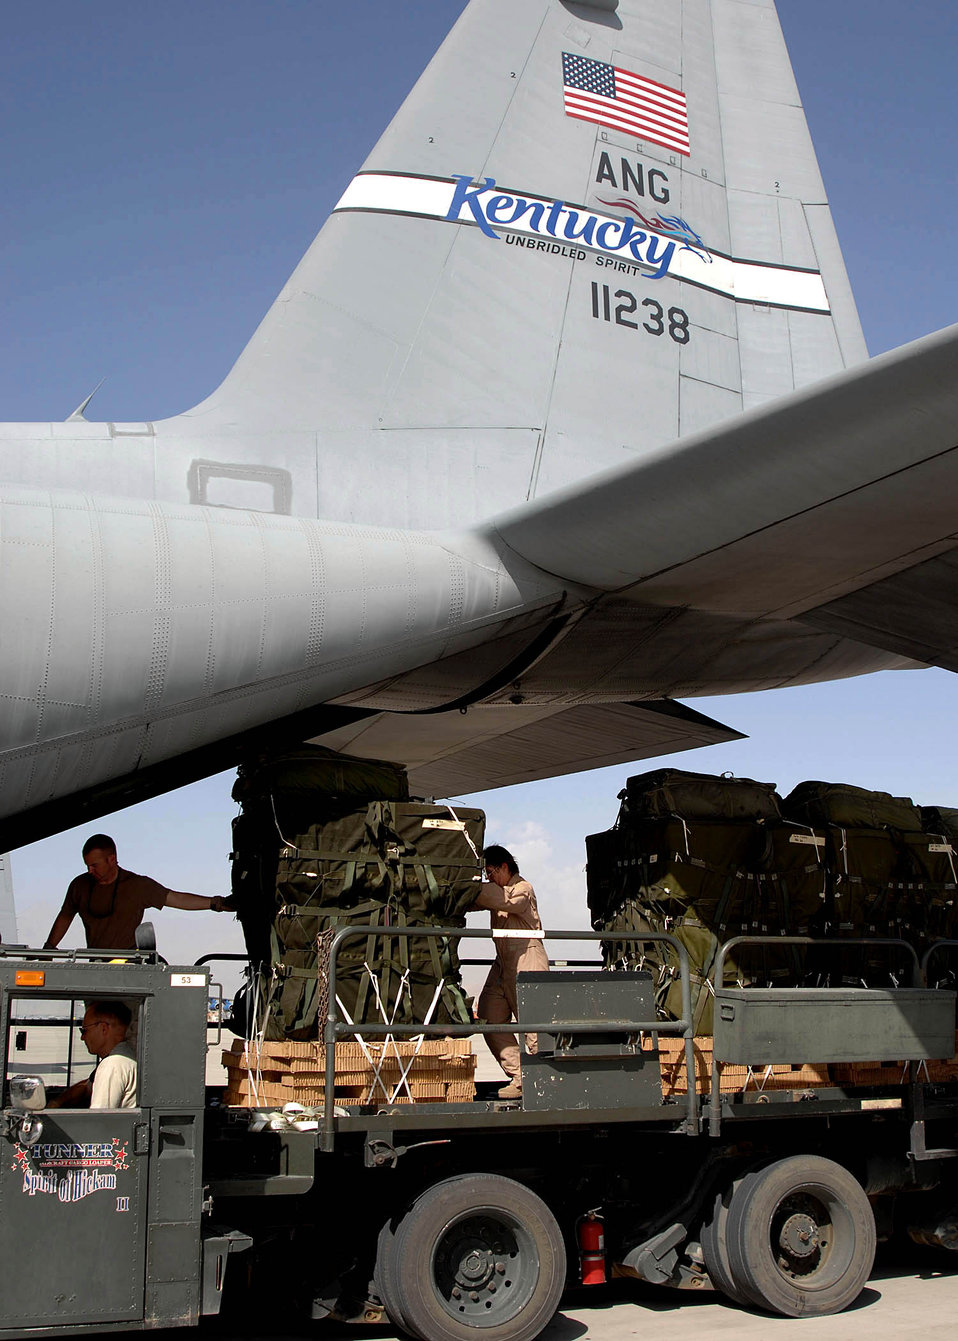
C-130s put troops, supplies on target in Afghanistan

Aircrew members and rigging specialists load airdrop bundles off a K-loader onto a C-130 Hercules transport aircraft on the flightline at Bagram Air Base, Afghanistan. The members of the 774th Expeditionary Airlift Squadron transported the supplies to troops in the field.